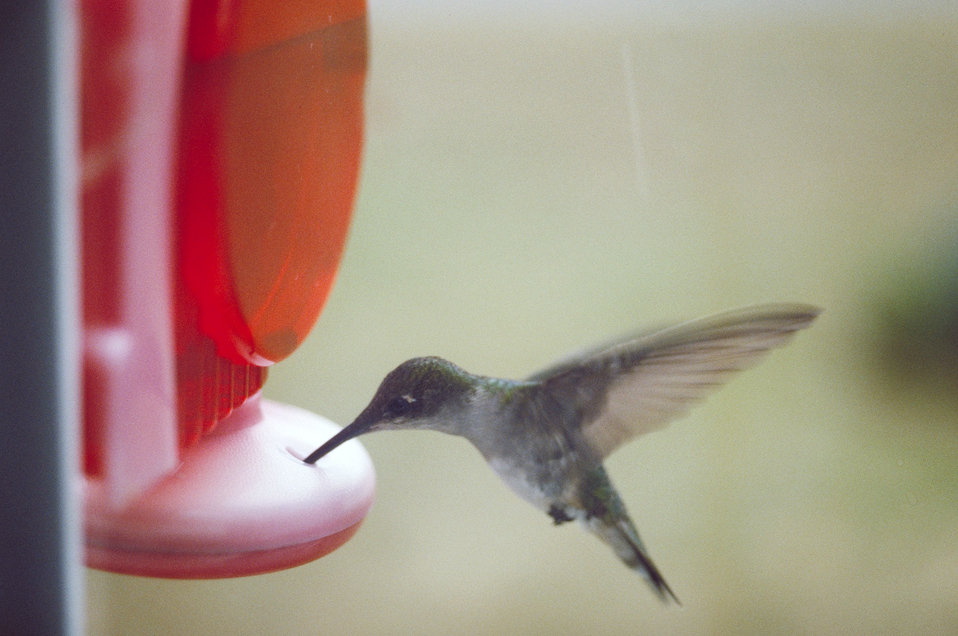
A female ruby-throated humming bird feeds at a home feeder. Hummingbirds are one of nature’s many pollinators for flowers and crops and are crucial in production for fruits and vegetables.